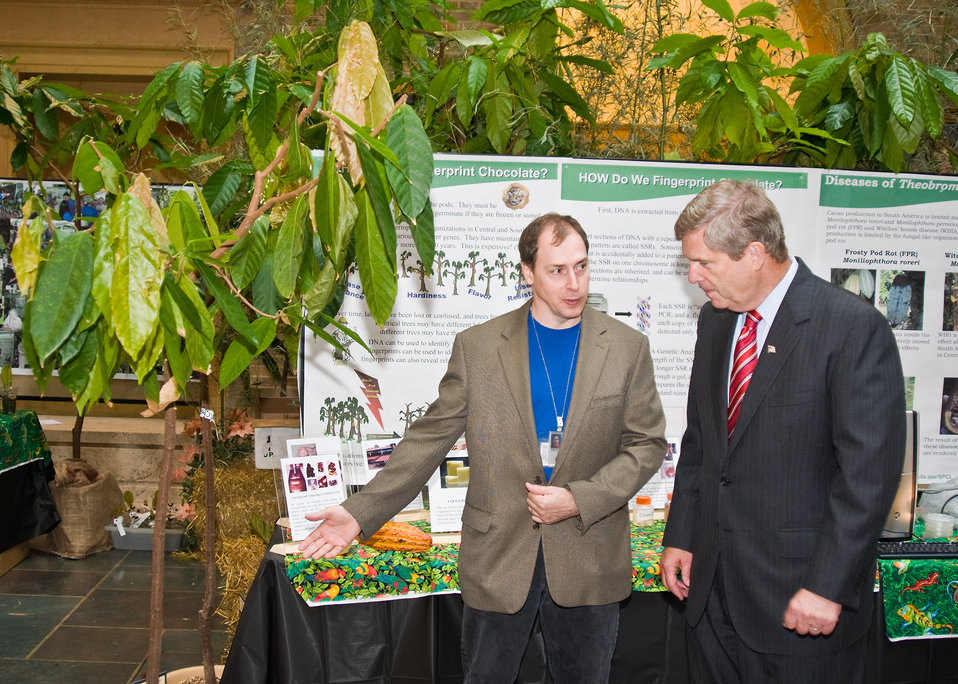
Dr. Lyndel Meinhardt (left) , Research Leader, Sustainable Perennial Crops Laboratory, Beltsville Agricultural Research Center, Beltsville, Maryland presents a cacao tree to Agriculture Secretary Tom Vilsack (right) at the, 'Celebrating Science: Bed Bugs...Chocolate...and Beyond' event held a the United States Department of Agriculture in Washington, DC, on Monday, October 4, 2010. USDA Photo 10di1515-11 by Bob Nichols.